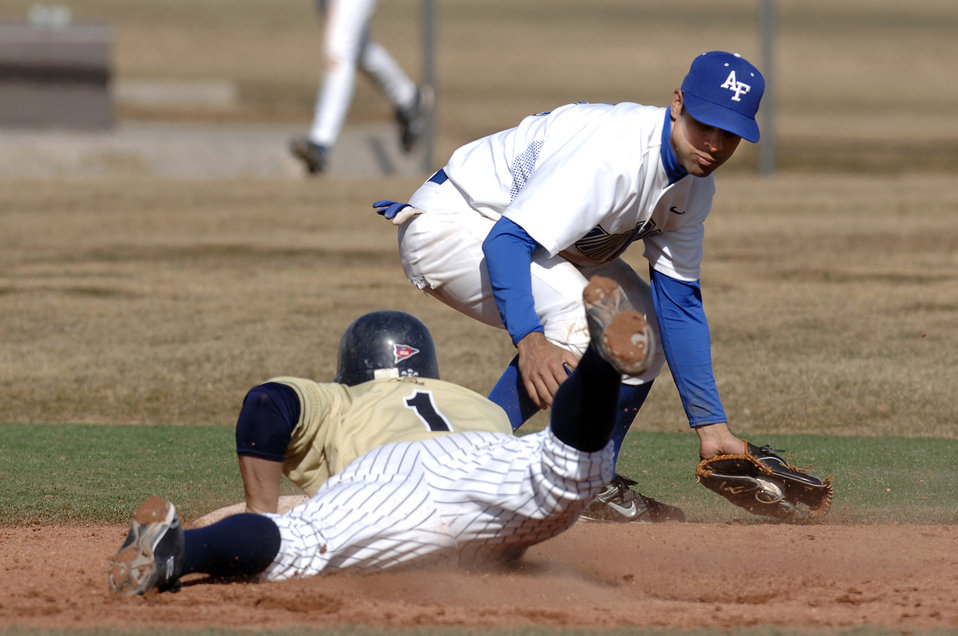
Falcons fall to Northern Colorado

Freshman cadet Geno K.J. Randhawa attempts to tag a runner at 2nd base against the Northern Colorado Bears Feb 10. He is the shortstop for the AF Academy Men Falcons baseball team. The Bears swept the three game weekend series from the Falcons.